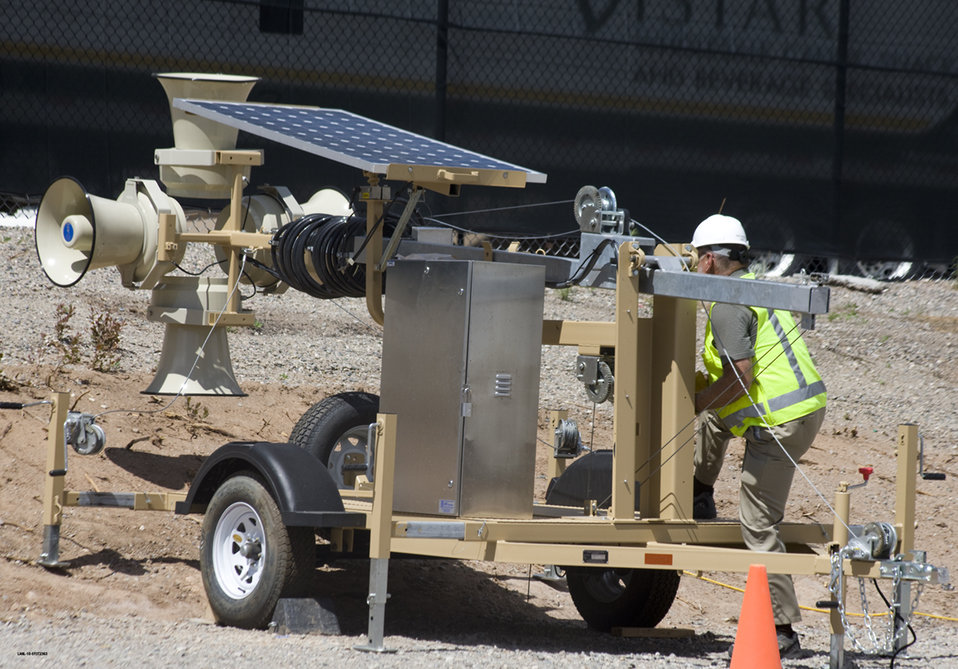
Remote-control excavators are used to excavate parts of the Los Alamos National Laboratory’s oldest waste disposal site safely, the Material Disposal Area B.